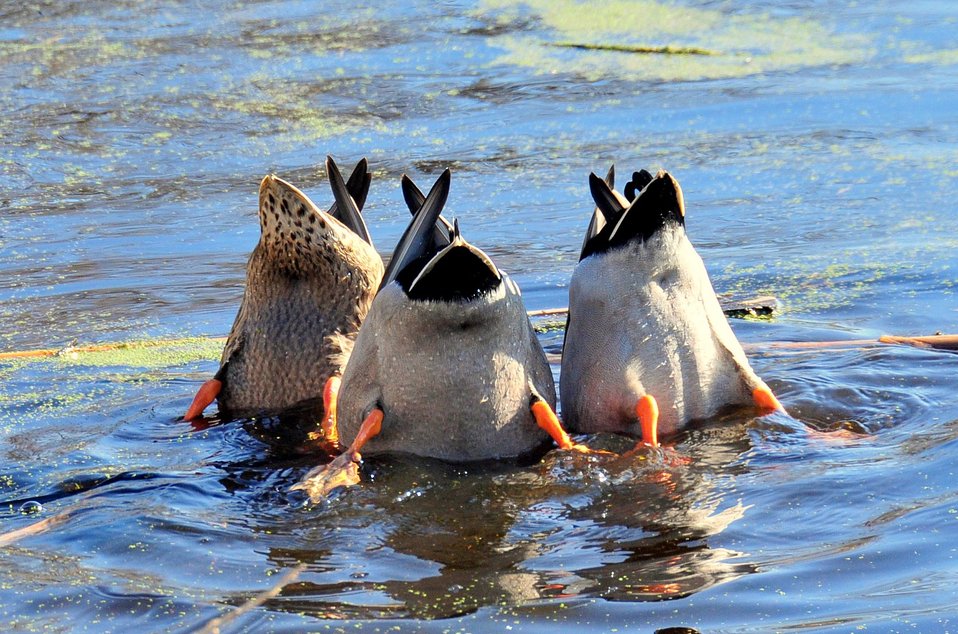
2nd Place - Bottoms Up!

Credit: Tom Koerner / USFWS

Photo Contest Entry #189